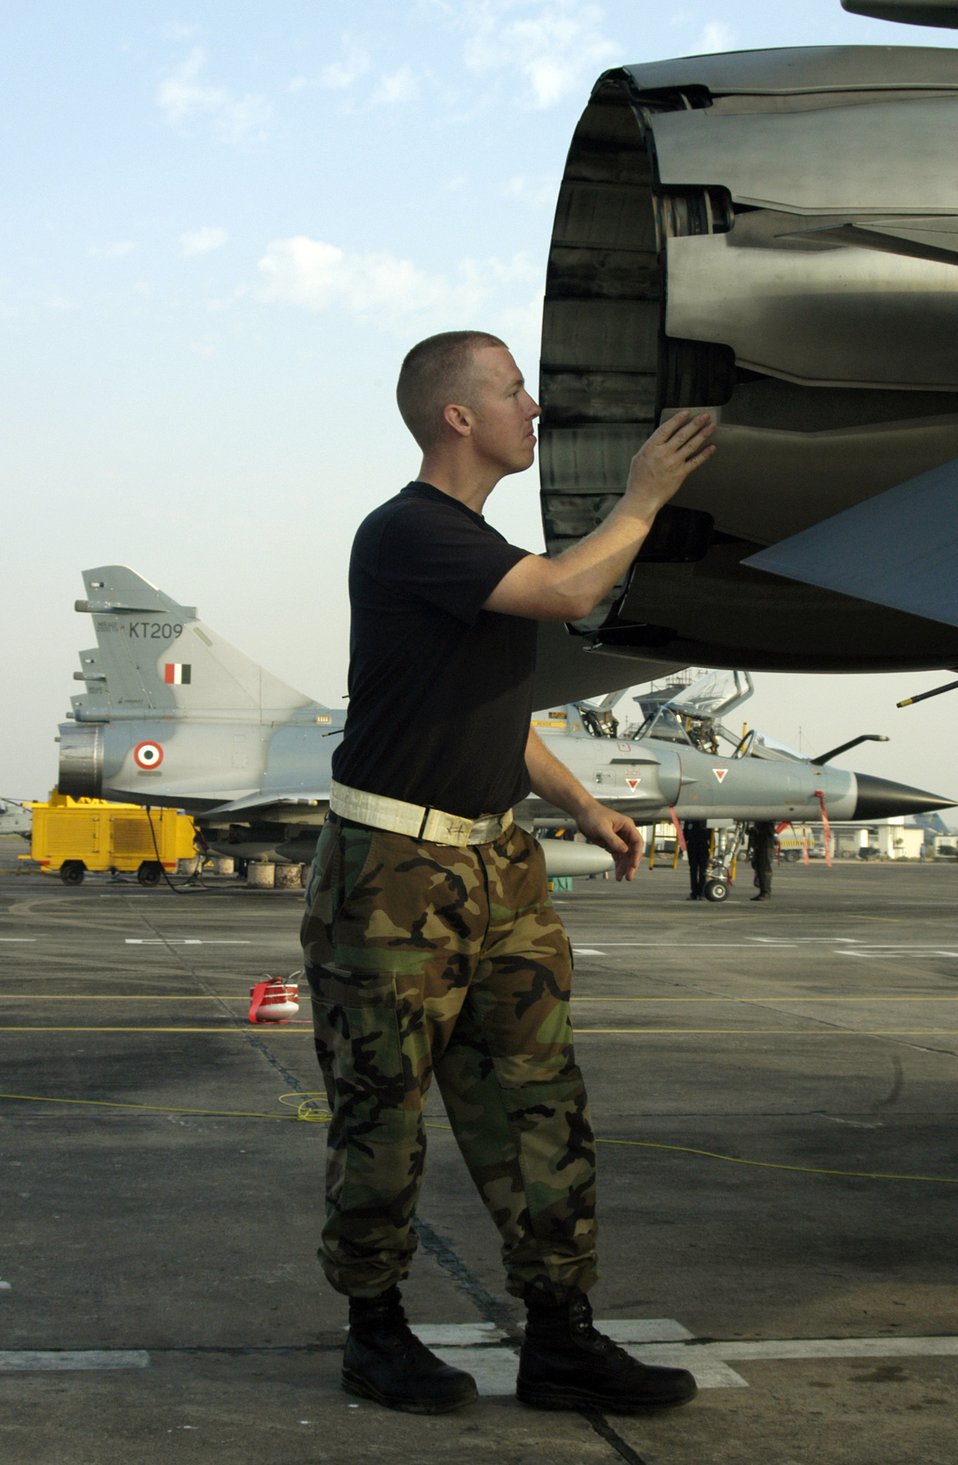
Cope India 06

KALAIKUNDA AIR STATION, India -- Crew chief Staff Sgt. Garrett Faust inspects the exhaust nozzle on his the F-16 Fighting Falcon here. The Falcons are flying dissimilar air combat sorties against Indian Mirage fighters -- like in the background -- and other aircraft during exercise Cope India 06, which ends Nov. 19. The sergeant is from the 35th Aircraft Maintenance Squadron at Misawa Air Base, Japan.